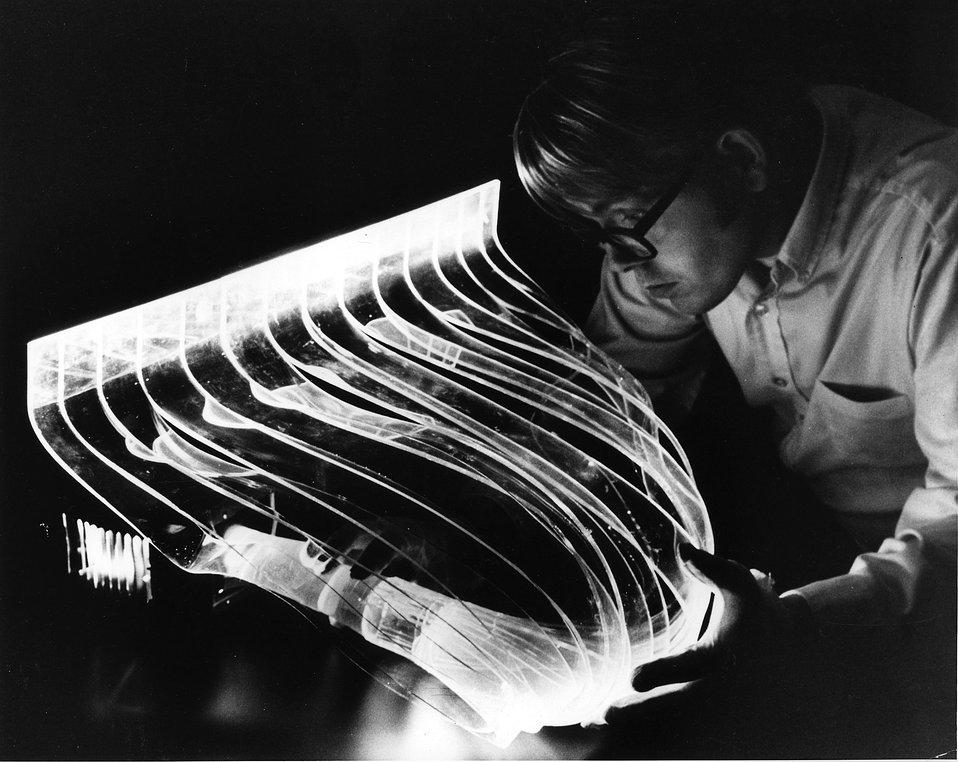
Light pipes are used to transmit the light flashes which occur when high energy particles pass through a scintillator to a photomultiplier tube.
c.1970